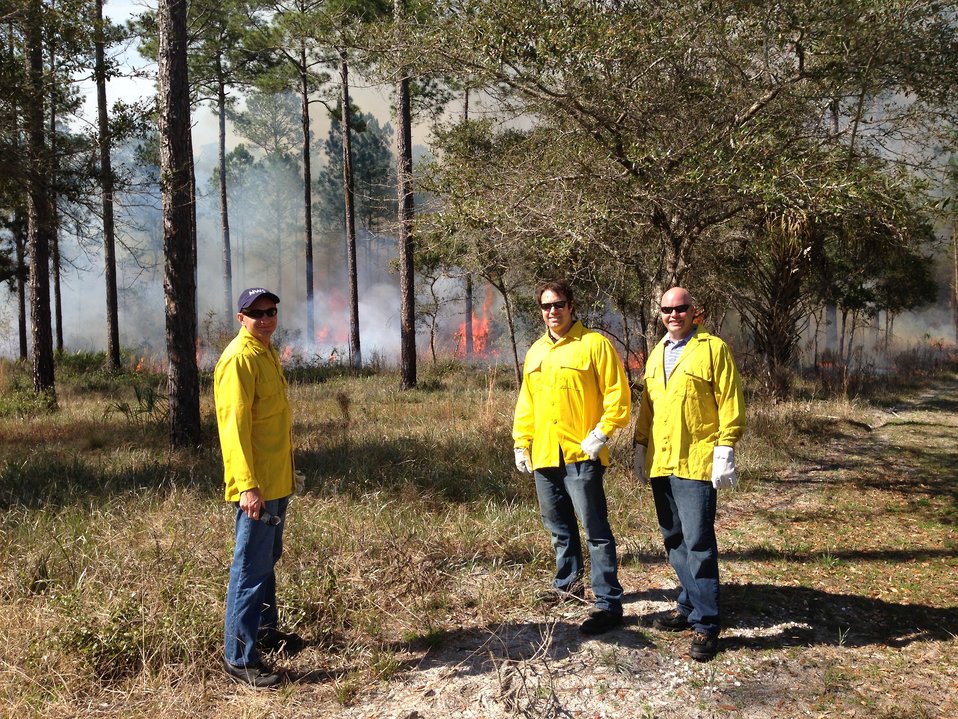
NWS Emergency Response Meteorologists and Fire Weather Forecasters Rick Davis, Todd Barron, and Jon Jelsema at a demonstration prescribed burn on the Lower Suwannee NWR